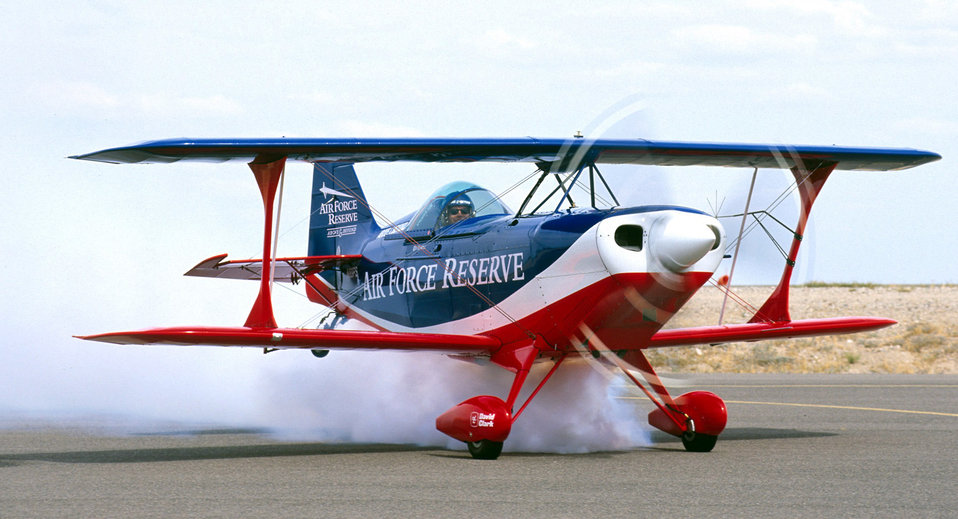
Dream machine

ROBINS AIR FORCE BASE, Ga. -- Owned by Maj. Ed Hamill, the Dream Machine is a factory-built, unmodified biplane equipped with manual instruments including an altimeter, airspeed indicator and magnetic compass. Hamill performs at air shows around the country as a recruiting tool for Air Force Reserve Command.